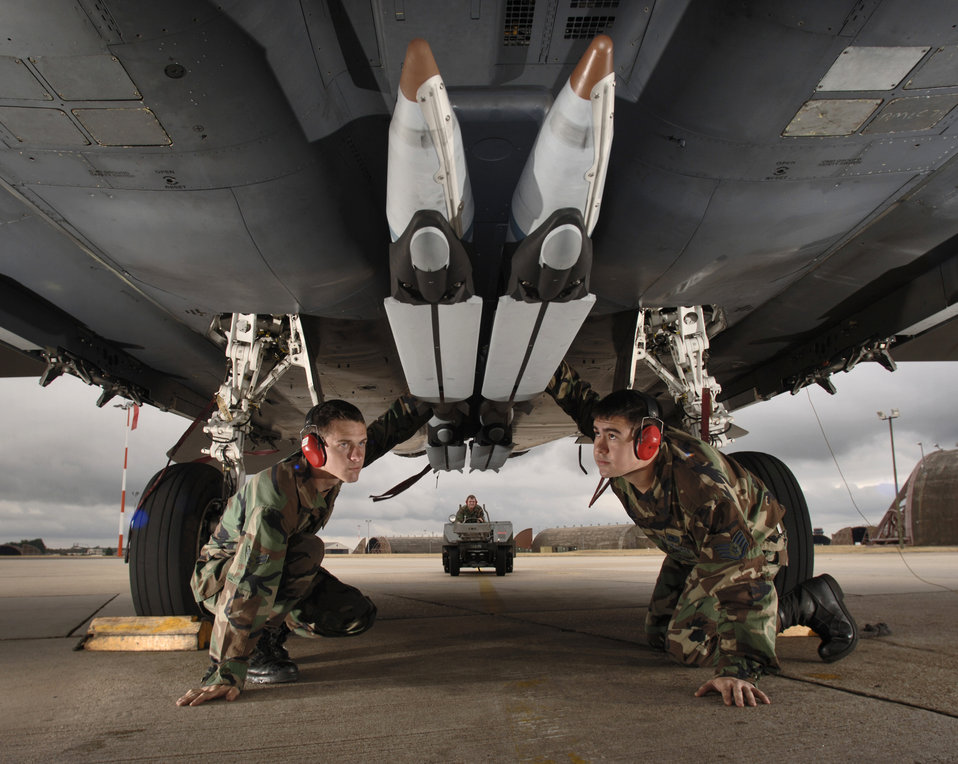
Small-diameter bomb makes Strike Eagle squadron more lethal

Airman 1st Class Matt Aggers (left) and Staff Sgt. Randy Broome perform a final check of the stowed twin wings on four ground-training Guided Bomb Unit-39 small-diameter bombs loaded on an F-15E Strike Eagle at Royal Air Force Lakenheath, England, on Aug. 1. When released, the bombs rotate and deploys diamond-backed wings. The Airmen are aircraft weapons specialist with the 48th Aircraft Maintenance Squadron.